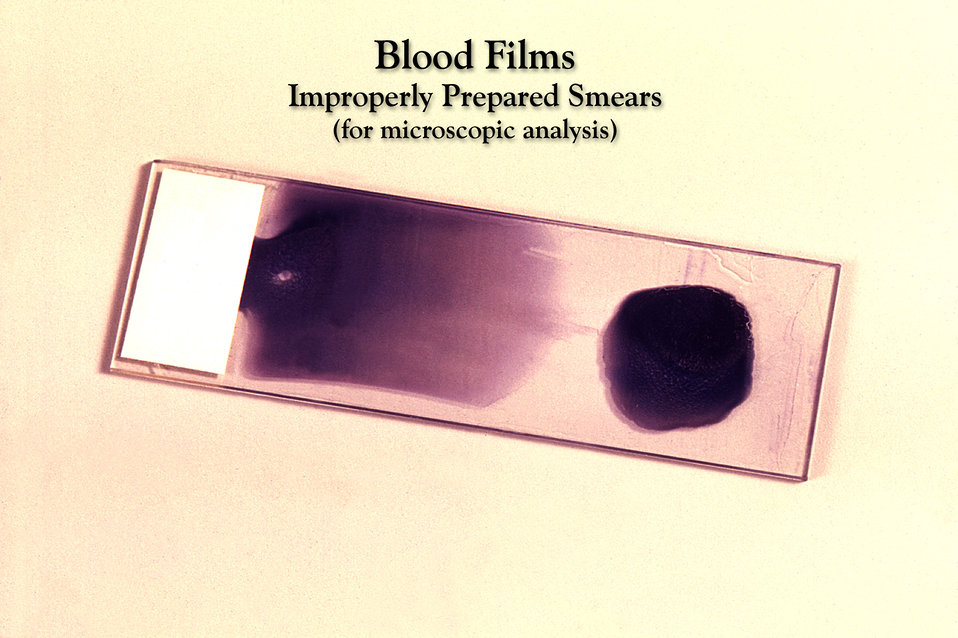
This Giemsa stained slide preparation revealed an unfavorable outcome that was too alkaline, and too thick a specimen.